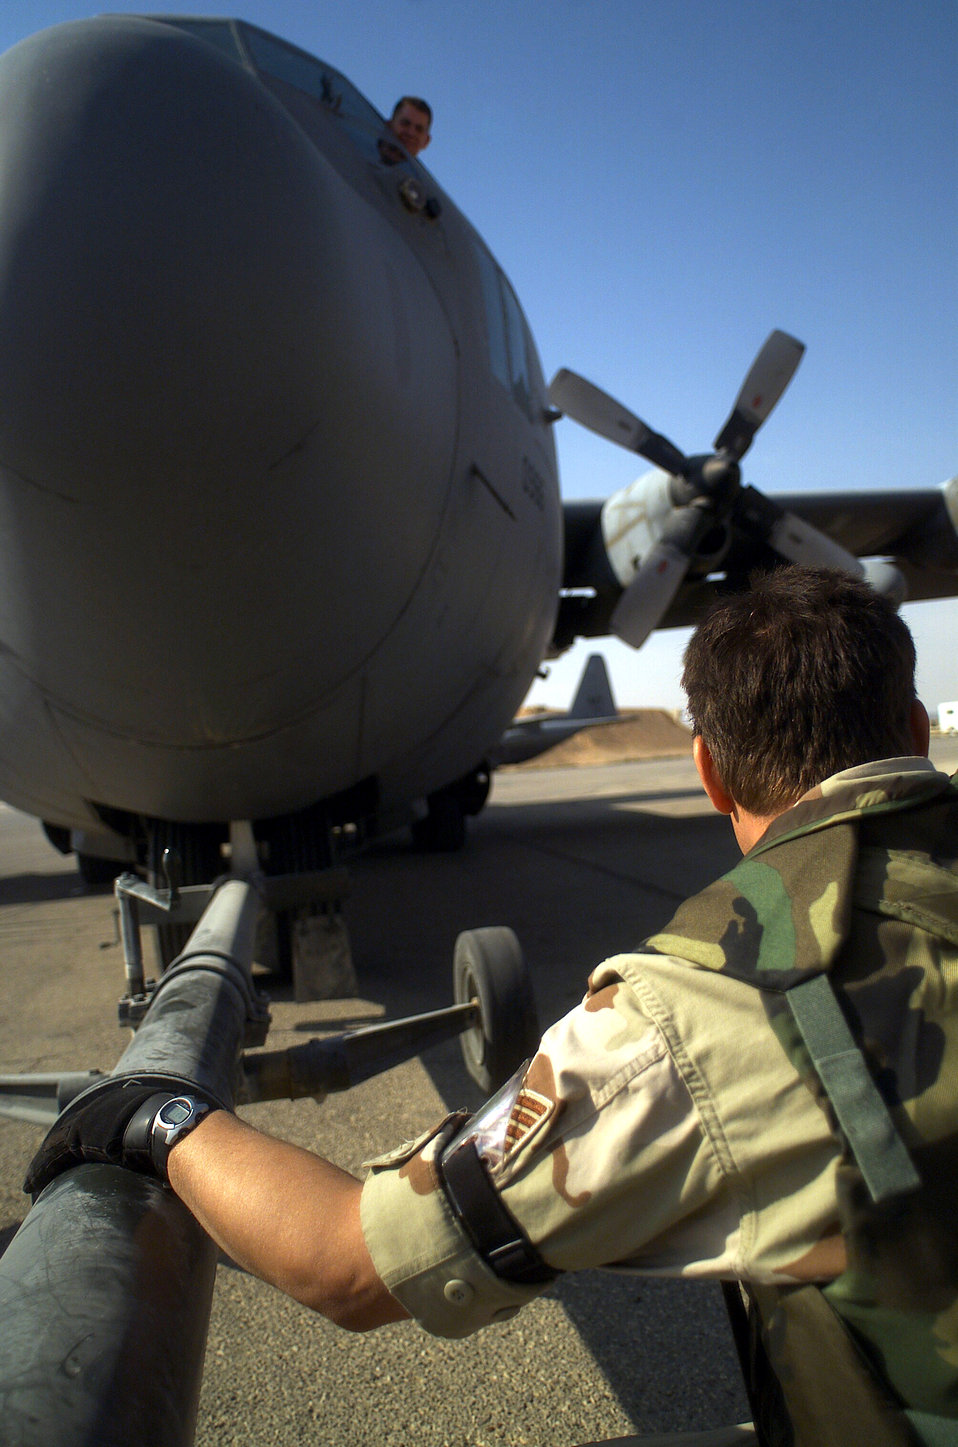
Towing an HC-130

OPERATION IRAQI FREEDOM -- A 410th Air Expeditionary Wing, 71st Expeditionary Rescue Squadron, tow supervisor checks a tow bar that will be used to tow this HC-130 to its appropriate parking space. Forward deployed in an undisclosed location, the 410th AEW is responsible for critical sorties flown in support of Operation Iraqi Freedom.